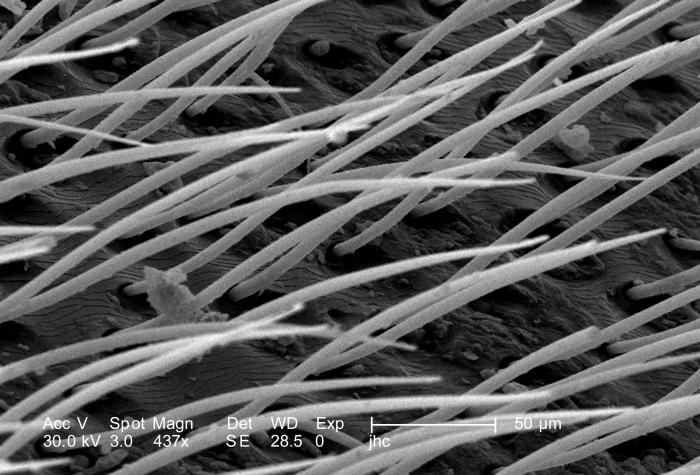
Under a moderate magnification of 437X, this scanning electron micrograph (SEM) depicted some of the morphologic details found on the exoskeletal surface of an unidentified hornet discovered in the suburbs of Decatur, Georgia. In this particular view, we see a close-up of the numerous sensorial 'hairs', or 'setae', which adorn almost the entire exterior, providing the hornet with data indicative of changes encountered in its environment such as chemical, thermal, and tactile queues. These setae are composed of chitin, unlike mammalian hair, which is composed of the molecule keratin. Also note the shingle-like arrangement of the hornet's exoskeletal surface from which the setae originate.